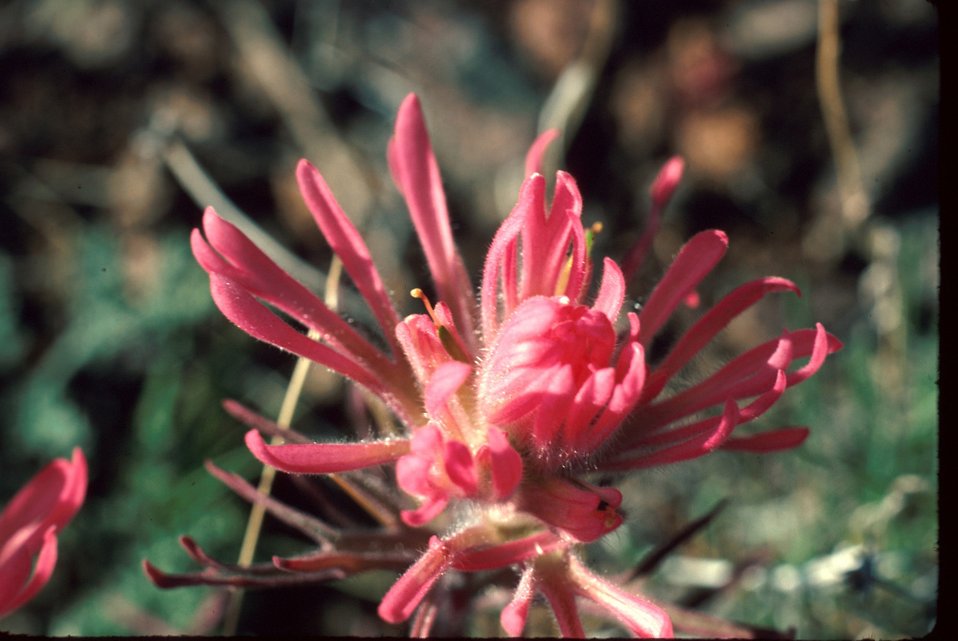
Castilija Indian Paintbrush Wildflower